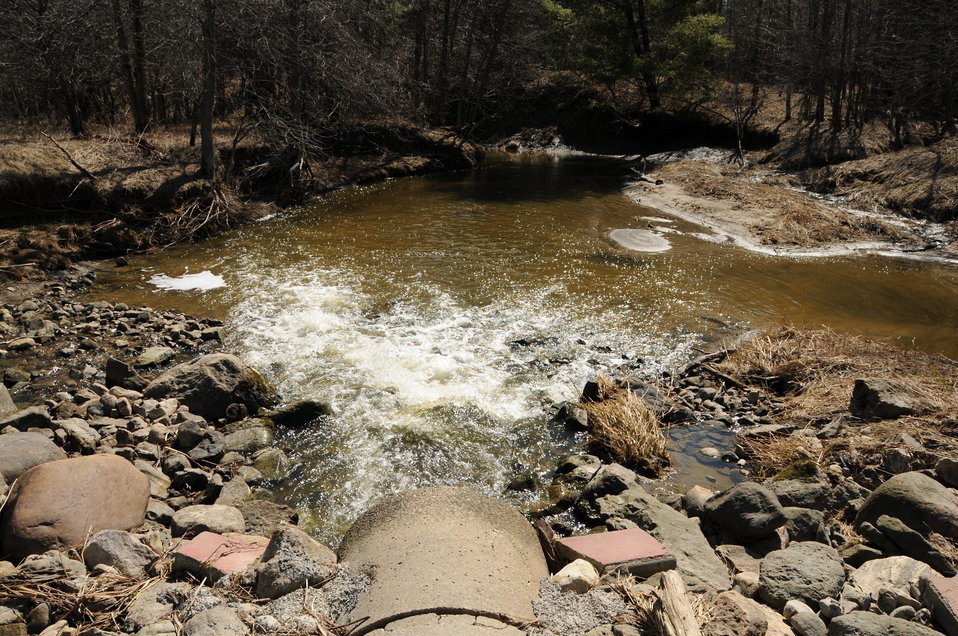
Little Sucker Brook: Assessing water flow barrier

The stone stream crossing and small culvert for water passage were placed by a farmer years ago and inhibited the migration of sucker, bullhead, walleye and other fish.